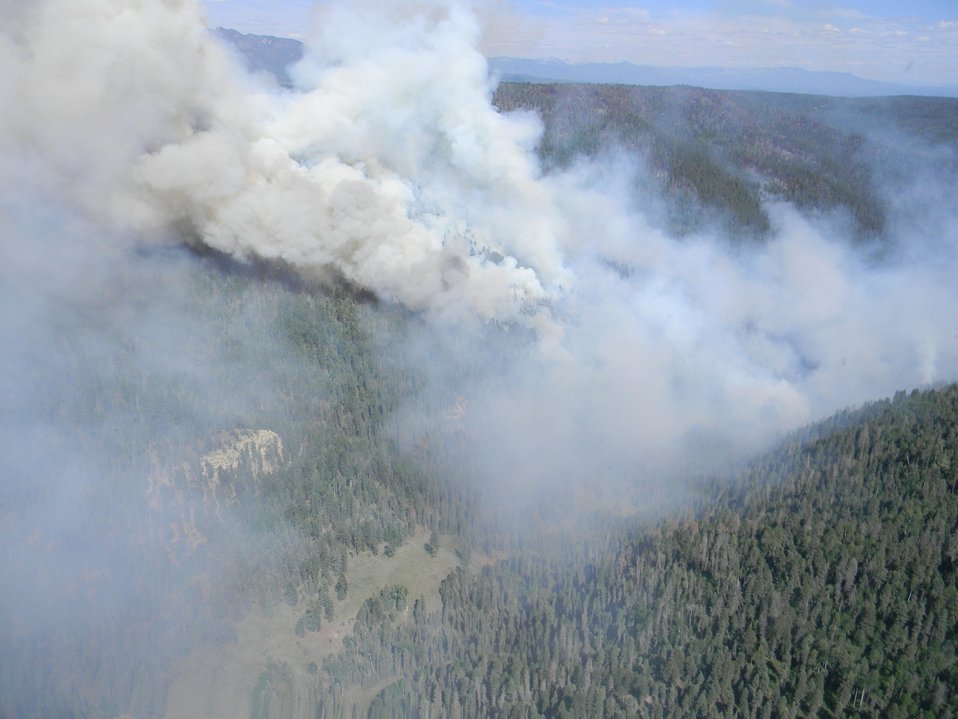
The Little Sand Wildfire burns in the San Juan National Forest near Pagosa Springs, CO on Tuesday, June 5, 2012. The wildfire was started by a lightening strike on May 13, 2012. The fire is in rugged and inaccessible terrain, north of the Piedra River, and is currently estimated at 14,224 acres with 30% containment as of June 20, 2012.